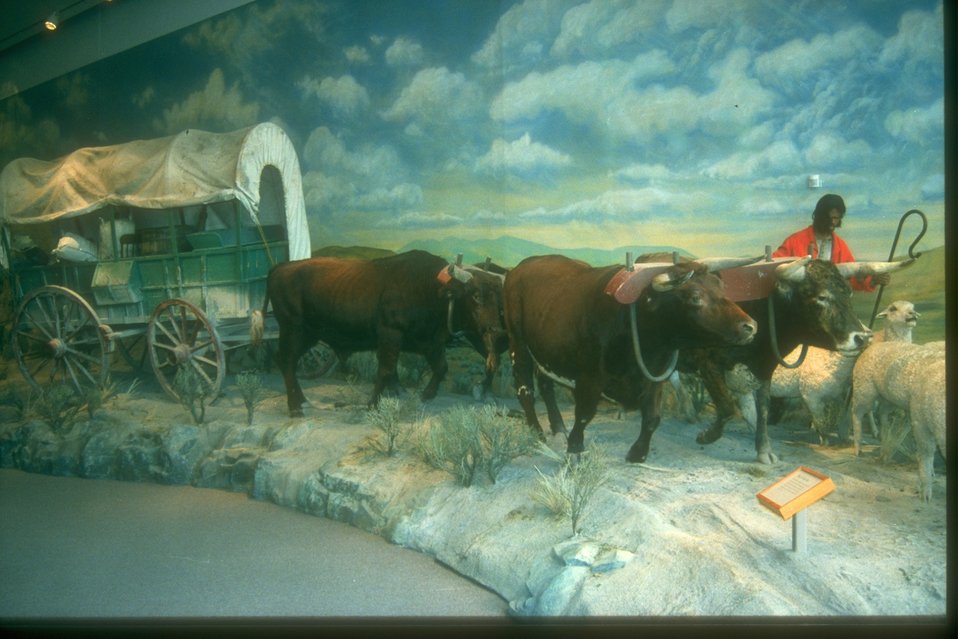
Exhibit at the NHOTIC of early Oregon settler herding sheep and oxen pulling his covered wagon.